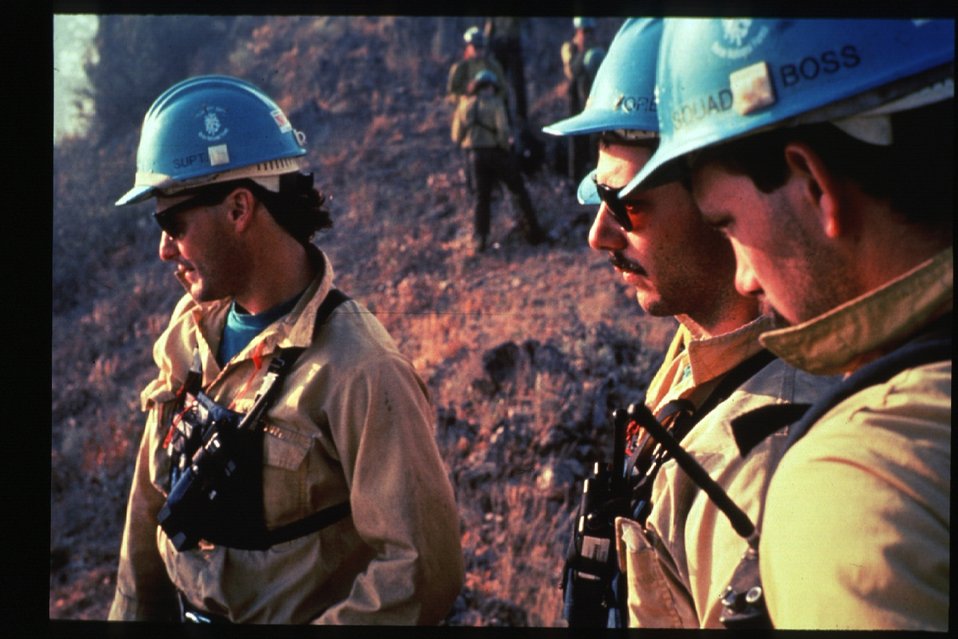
Boise Foothills Fire Danskin Mountains and South Fork of Boise River Wild Fire Fighters Four River Field Office LSRD Lower Snake River District